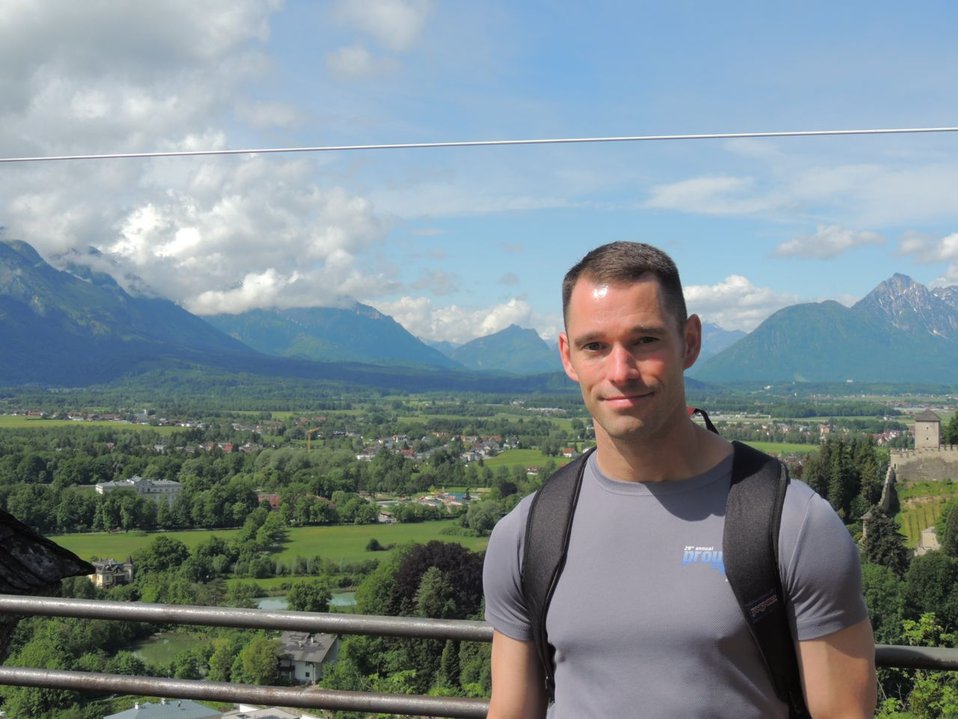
lootens-white4

U.S. Forest Service Northern Research Station information technology specialist f Jim Lootens-White is featured in a recent online profile. He shares his interests in web development projects to explain the Station’s research results.